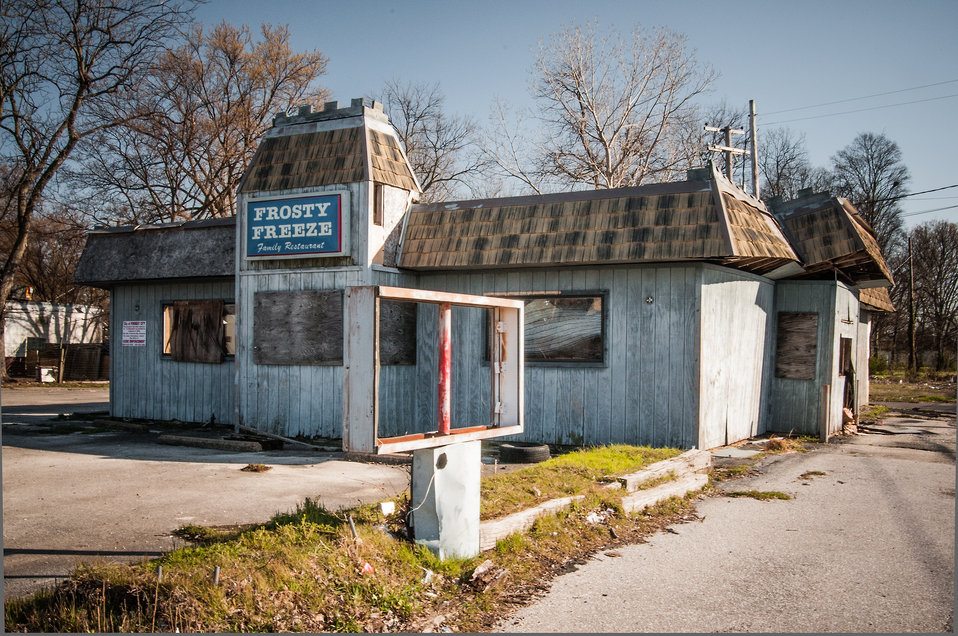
A building sits vacant in Forest City, AR on Mar. 5, 2013. The East Arkansas Enterprise Community, Inc. in Forrest City, AR is one of 42 community-based organizations located in high poverty areas in the U.S. to benefit from the Arkansas Delta Seeds of Change (ADSOC) Initiative. The U.S. Department of Agriculture (USDA) in partnership with Heifer International (an International organization whose mission is to work with communities to end hunger and poverty and care for the Earth) and various for-profit and non-profit organizations have put in motion the “Seeds of Change Implementation Plan” to use sustainable agriculture to build food systems in the Arkansas Delta. The program has evolved into the ADSOC Initiative.